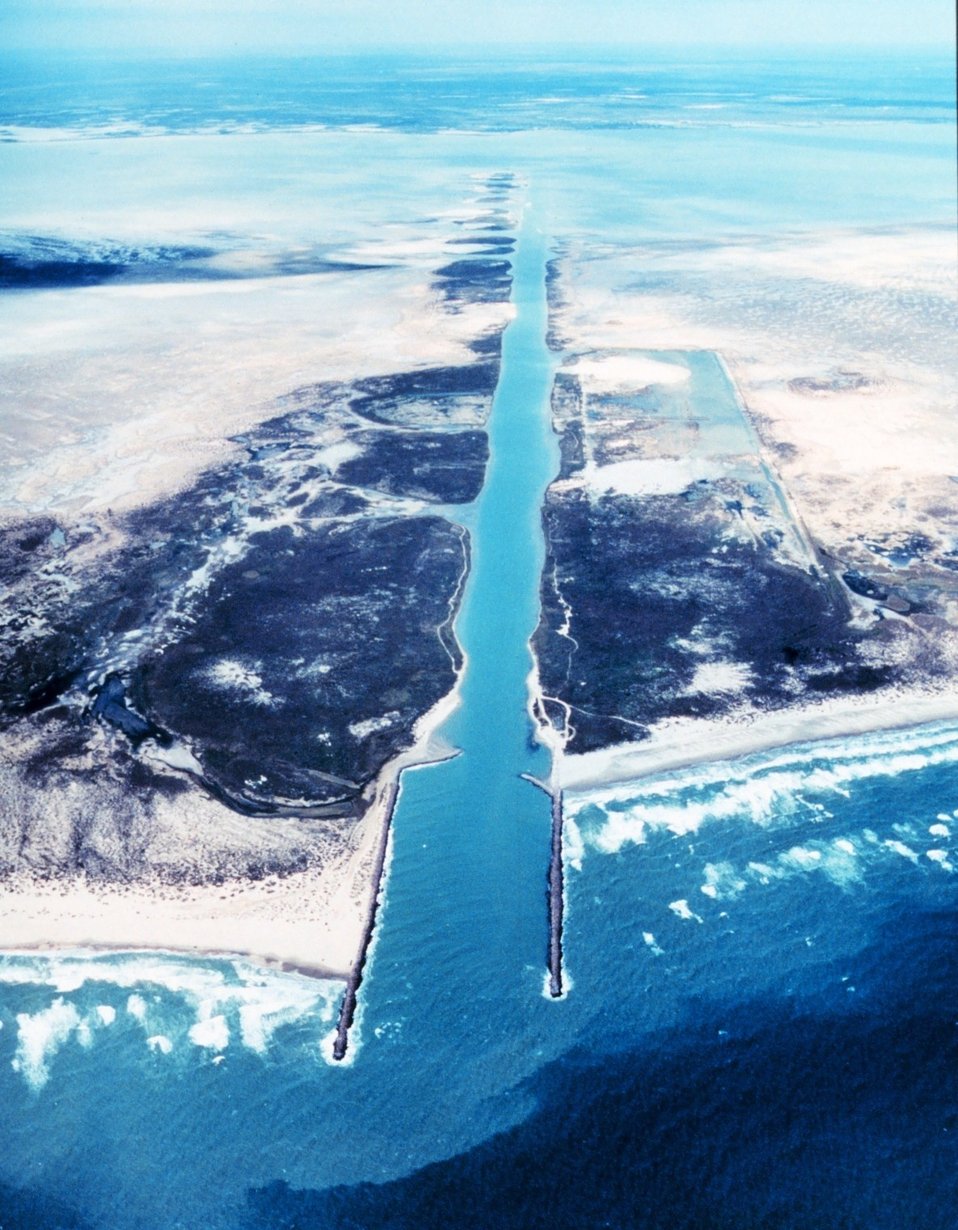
2634 North Latitude 9722 West Longitude.